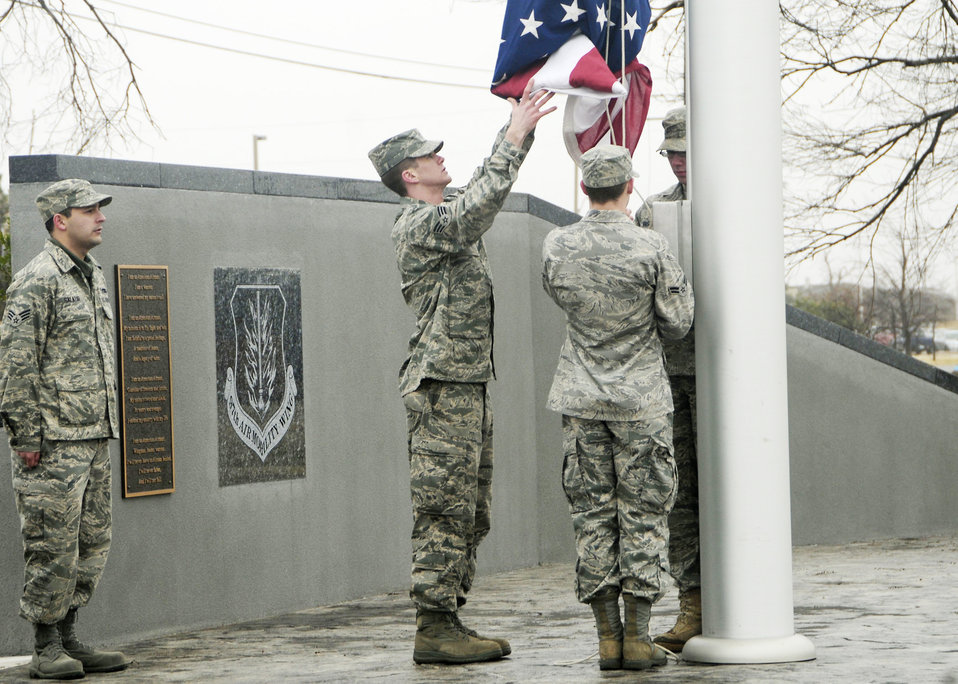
Altus training operations begin to recover from ice storm

(From left) Senior Airmen Raymond Salazar and Ryan Gava and Airmen 1st Class Chris Schaaf and Thomas Baszler raise the flag at the Wings of Freedom Park on Feb. 3, 2010, following an ice storm at Altus Air Force Base, Okla.